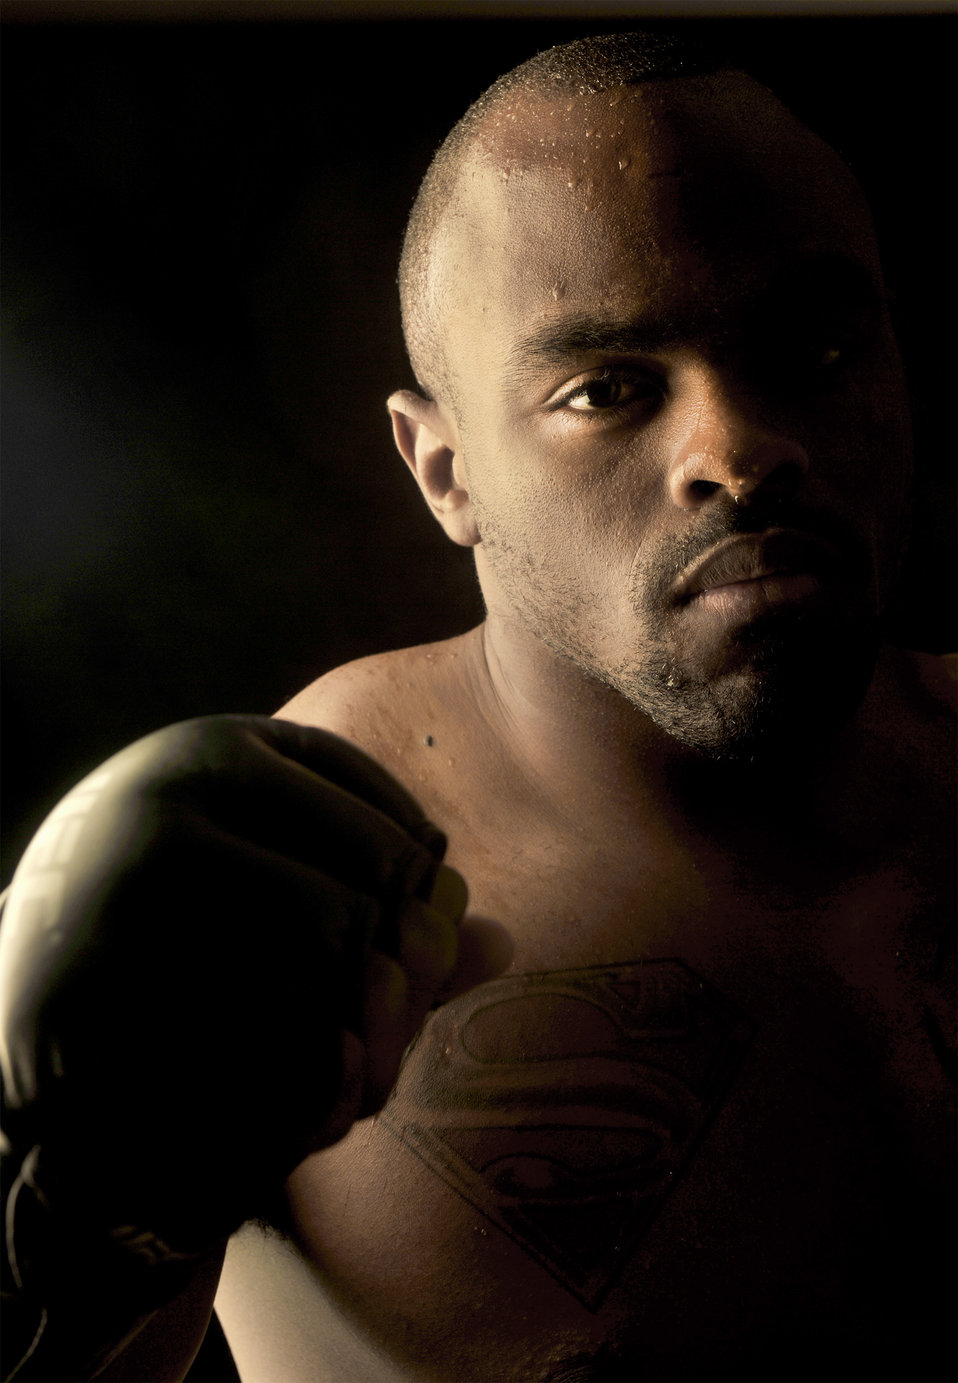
Moody AFB MMA fighter

Staff Sgt. Clint Williams gives the look of a fighter who knows hard work and success July 29, 2010, at Moody Air Force Base, Ga. The 185-pound middleweight fighter knocked out Steve Davis with a swift, left roundhouse kick to the head, earning him Georgia's record for quickest knockout. Sergeant Williams is a production manager with the 23rd Maintenance Operations Squadron.